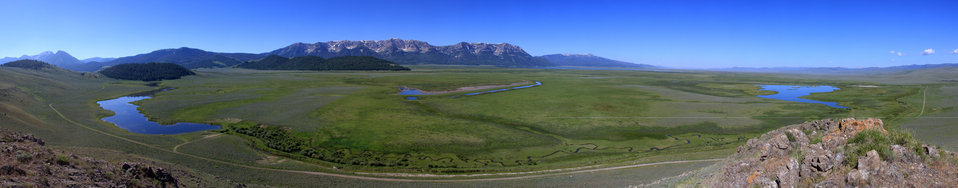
Culver Pond Panorama

A panorama of the northeast area of the Red Rock Lakes National Wildlife Refuge. In the foreground is Picnic Creek, and on the left is Culver Pond, fed by Picnic Springs. On the right is Widgeon Pond. The Centennial Mountains (Mount Taylor and Sheep Mountain) border the image on the far south.

Credit: James 'Newt' Perdue / USFWS

Photo Contest Entry #129